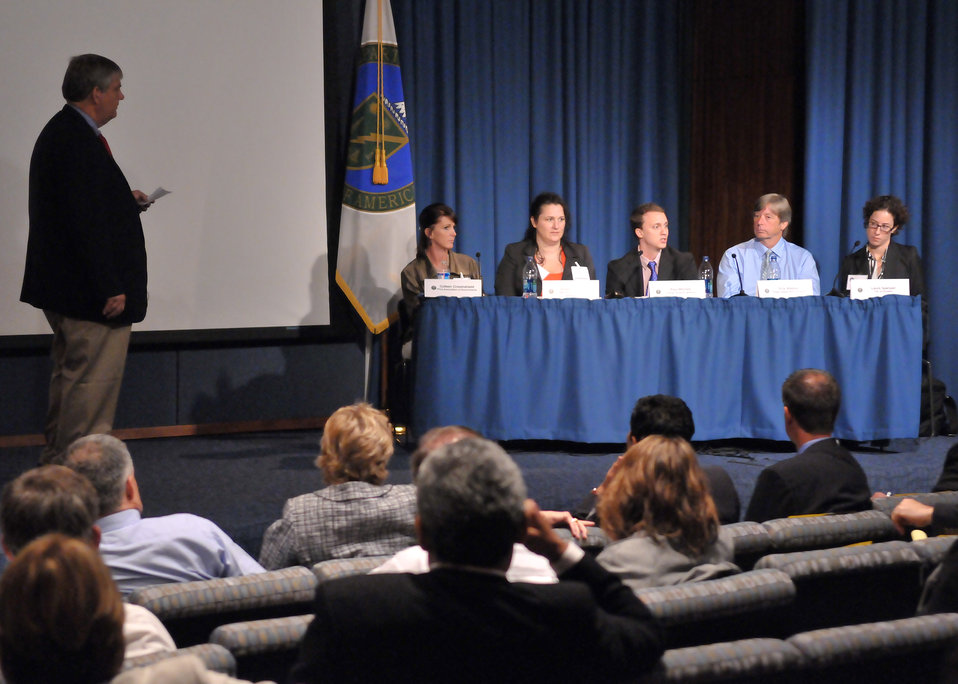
Panel at the EV Cities Workshop